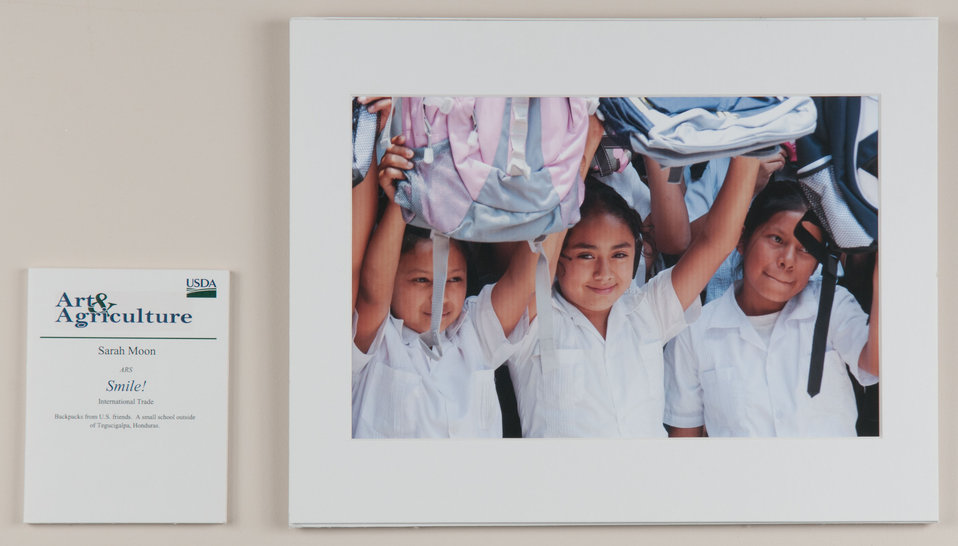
Online Viewer's Choice entries of the 2013 Art & Agriculture, Tuesday, July 9, 2013, in the South Building, Washington, D.C. Themes were expressed by employees from across the department and the contest was open to full-time and part-time USDA employees. Winning artwork will be displayed till the end of the year. U.S. Artistic expression is a creative outlet that is vital for an individual to grow and develop.